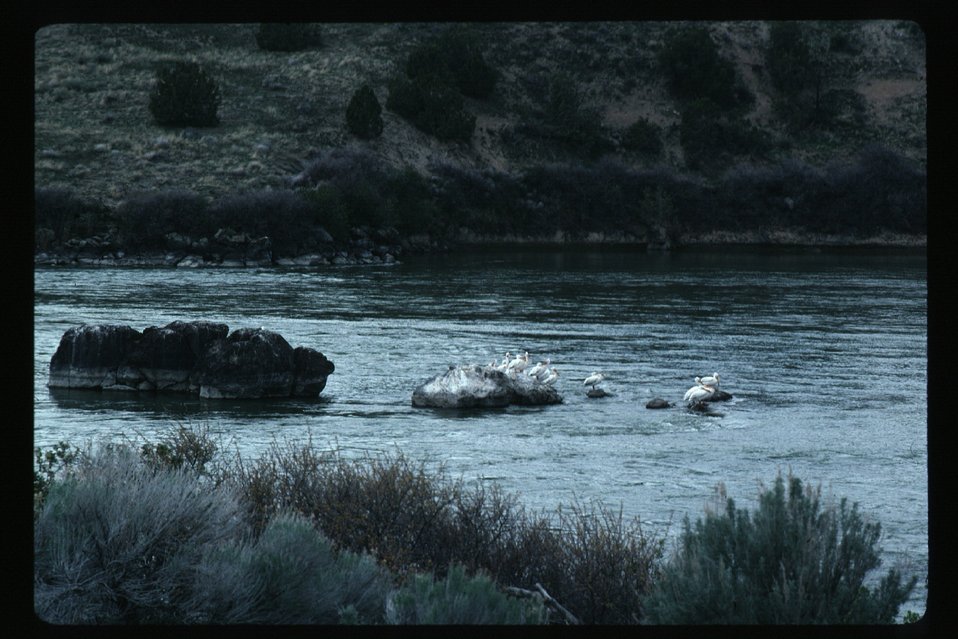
Pelicans on Snake River Wildlife USRD Upper Snake River District